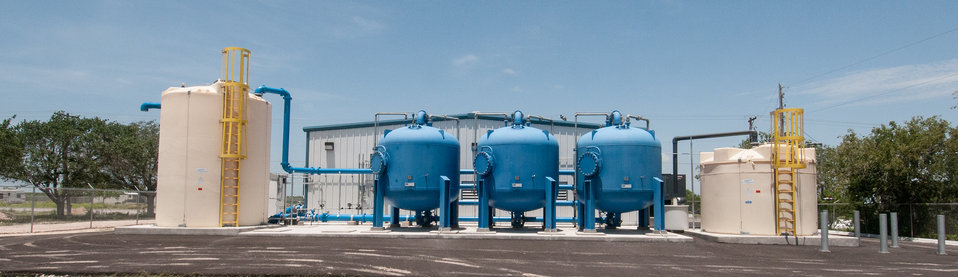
Back wash tank, (blue) arsenic removal absorber vessels, and Hydrochloric Acid (to balance Ph levels) at the Freer Water Control and Improvement District (FWCID) Arsenic Removal System Site, on Tuesday, June 18, 2013, in Freer, Texas.

FWCID benefits from the financial assistance of the U.S. Department of Agriculture (USDA) Rural Development (RD) to complete a two-phase approach to meeting the city’s water supply and safety needs, on Tuesday, June 18, 2013. Although, the naturally occurring arsenic levels have remained constant for more than a century, the Environmental Protection Agency (EPA) safe level standards have established lower levels of arsenic to be safe for human consumption. To meet those levels FWCID approached USDA and was awarded a $986,000 loan for Phase I, to install two new water wells, each rated at 167 gallons per minute (creating a total of eight wells); 13,600 feet of well collection lines; and 15,000 linear feet of well control line to remotely control the well pumps and the 1,000,000 gallon holding tank at the well facility, which supplies water to the new Arsenic Removal System (Phase II). Previously, water was manually controlled by personnel who knew when and how long to manually opened and closed water valves or started well pumps to ensure holding tank levels were within operating levels during peek and slack times of the day. Phase II was a combination of a $1,832,000 loan and a $1,258,750 grant, which provided for the customized arsenic removal system, seen in these photos. The system includes a new 3,530 sp. ft. facility, on a .76-acre site, and houses the operations room, computer and power system, laboratory room, and pump systems. The entire operation can be monitored through a desktop computer interface system. The computer-controlled system ensures raw water is fed to the arsenic removal pump system, which works in sequence to maintain a constant pressure, when needed, to pump water through (blue) arsenic removal absorber vessels, and into ground storage tanks that feeds the residential and commercial needs of the city. Samples of water are periodically tested; and so far the arsenic levels have been below 1 part per billion (PPB), well under the 10 PPB limit.